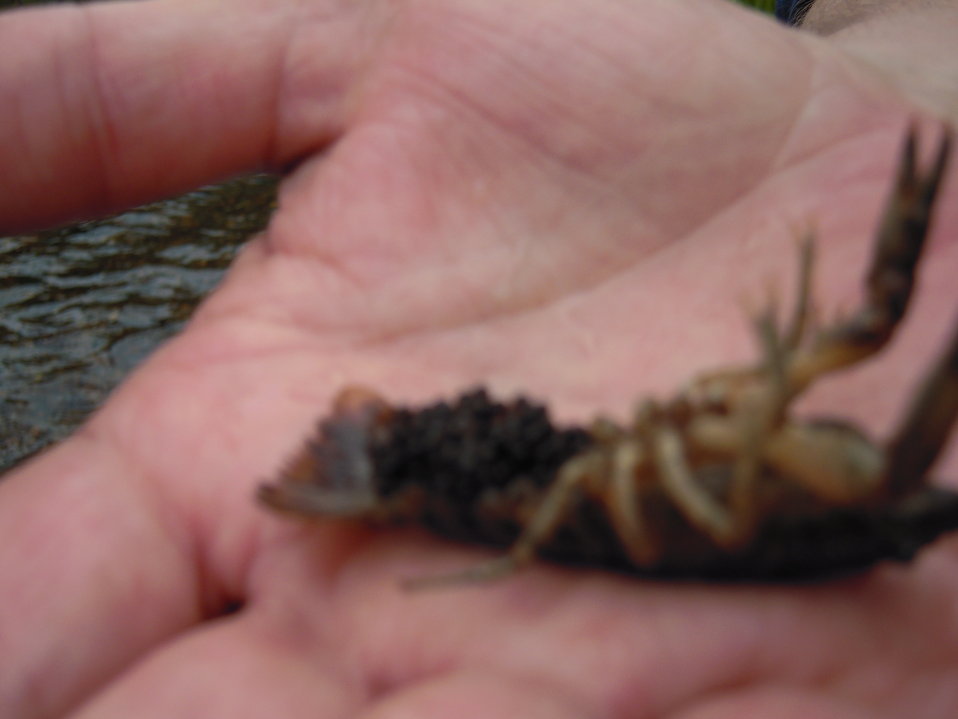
Female crayfish with eggs